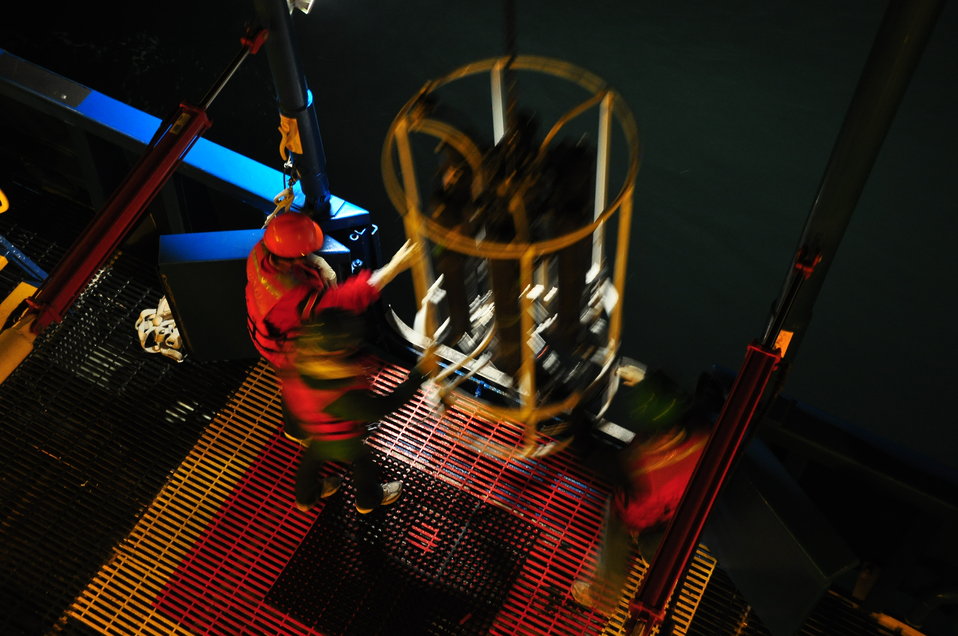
August 2009, Taking water samples at night northern Maine

To not waste time or resources EPA keeps this ship running 24 hours a day. Four teams of scientists rotated on multi hour shifts, rain, shine, fog or darkness.